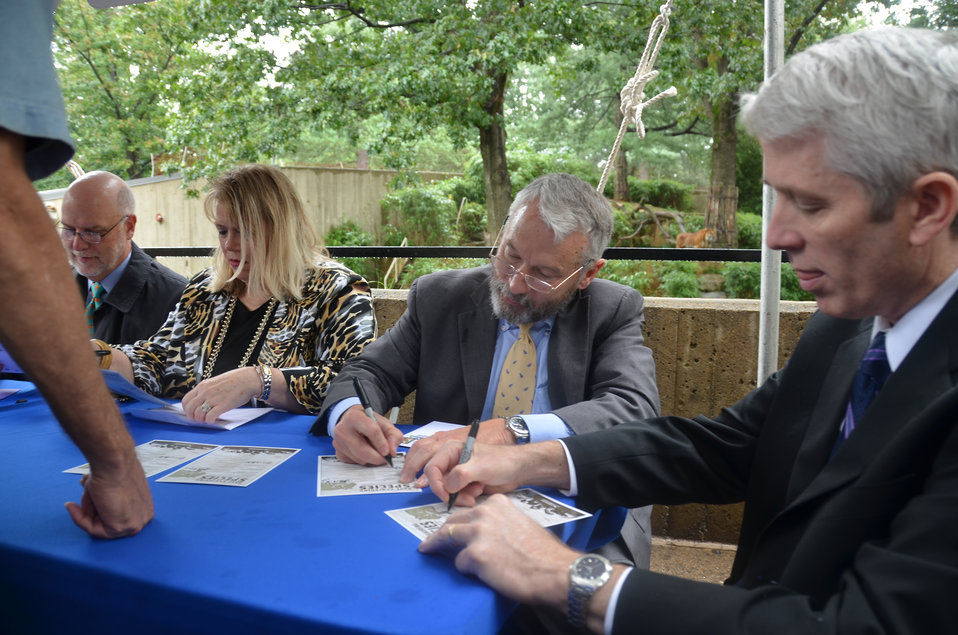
Save Vanishing Species Stamp First Day of Issue